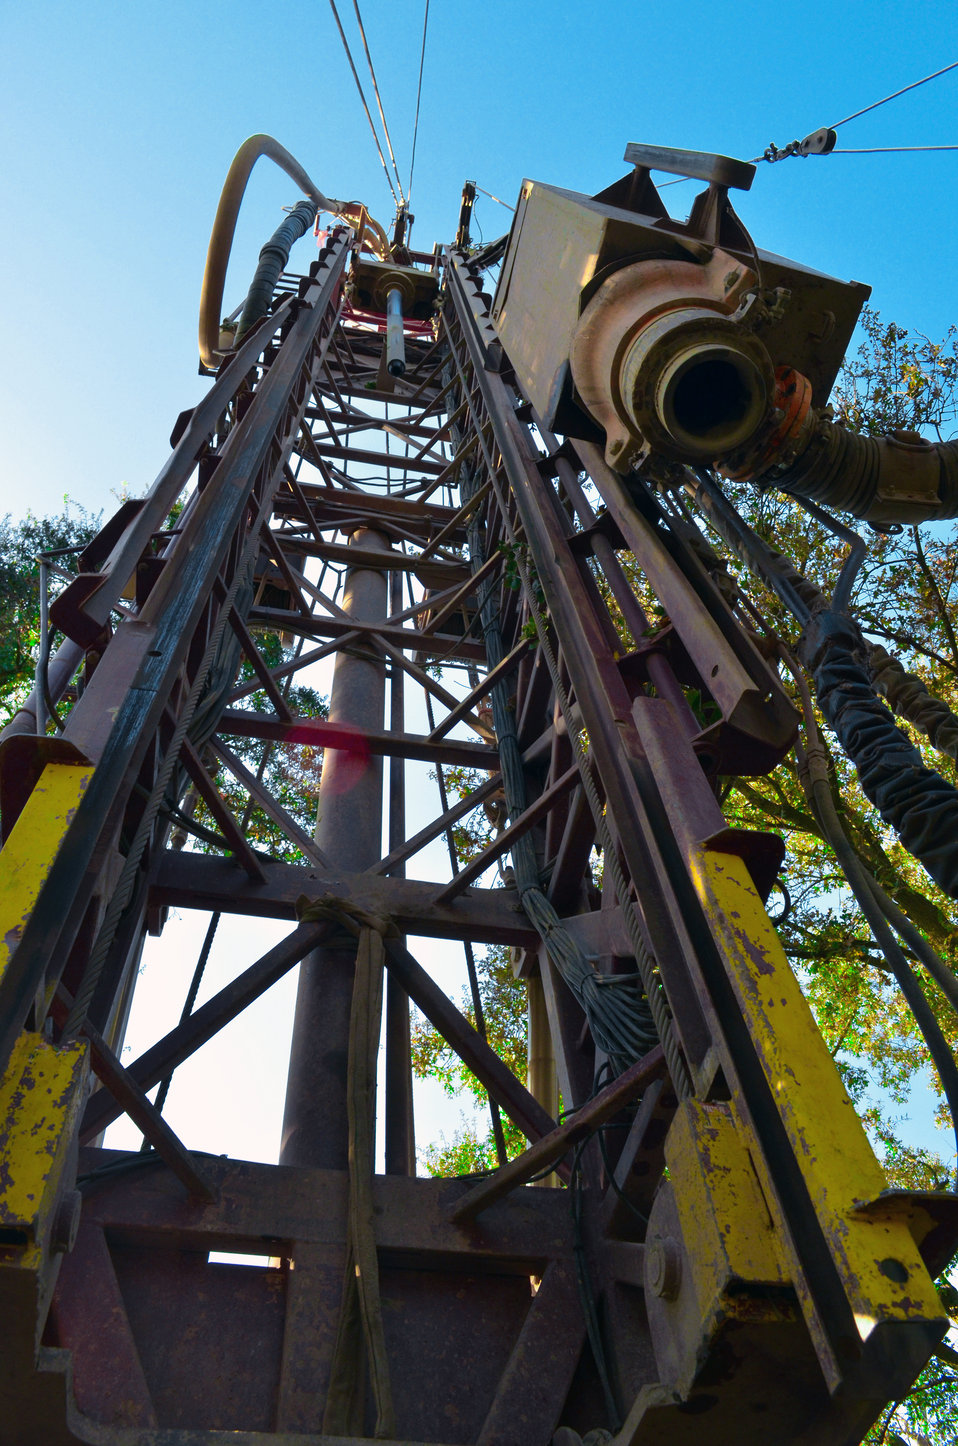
Corps contractor digs deep for answers

A close-up view of a special deep-drilling rig along the American River’s north bank in Sacramento, Calif., Nov. 18, 2011. Corps contractors are collecting samples of riverbank soil in 24-inch-tall, 4-inch-wide clear tubes, sealing them with wax and sending them to a lab for analysis. A total of seven samples were taken in November between Watt Avenue and the J Street Bridge. Engineers are assessing erosion and seepage risk along the riverbank as part of the Corps’ American River Common Features General Reevaluation Report, determining the federal plan to provide additional flood risk reduction to Natomas as well as the rest of the City and County of Sacramento. The sampling areas are left in better condition than before: They are filled with special material that prevents water seepage.